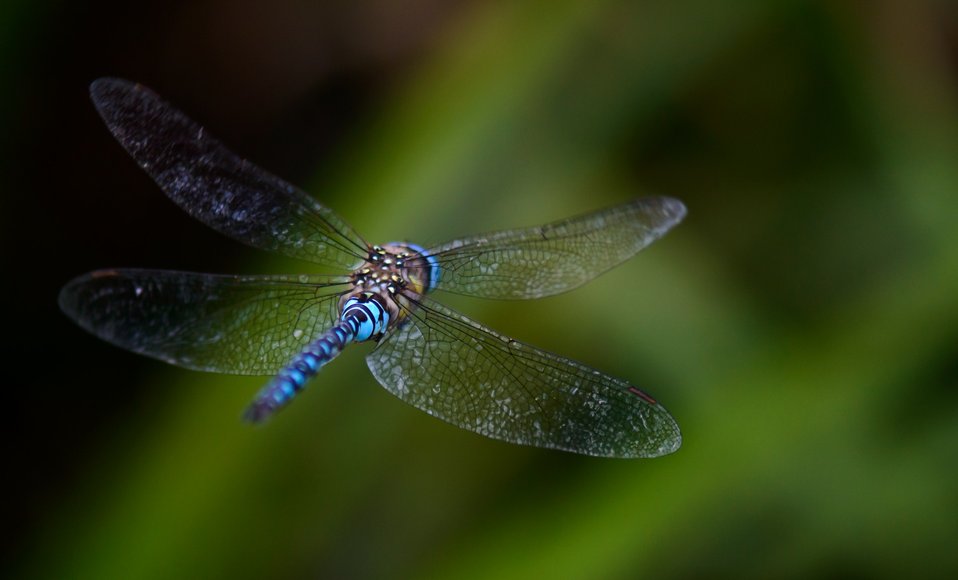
Dragonfly flight.